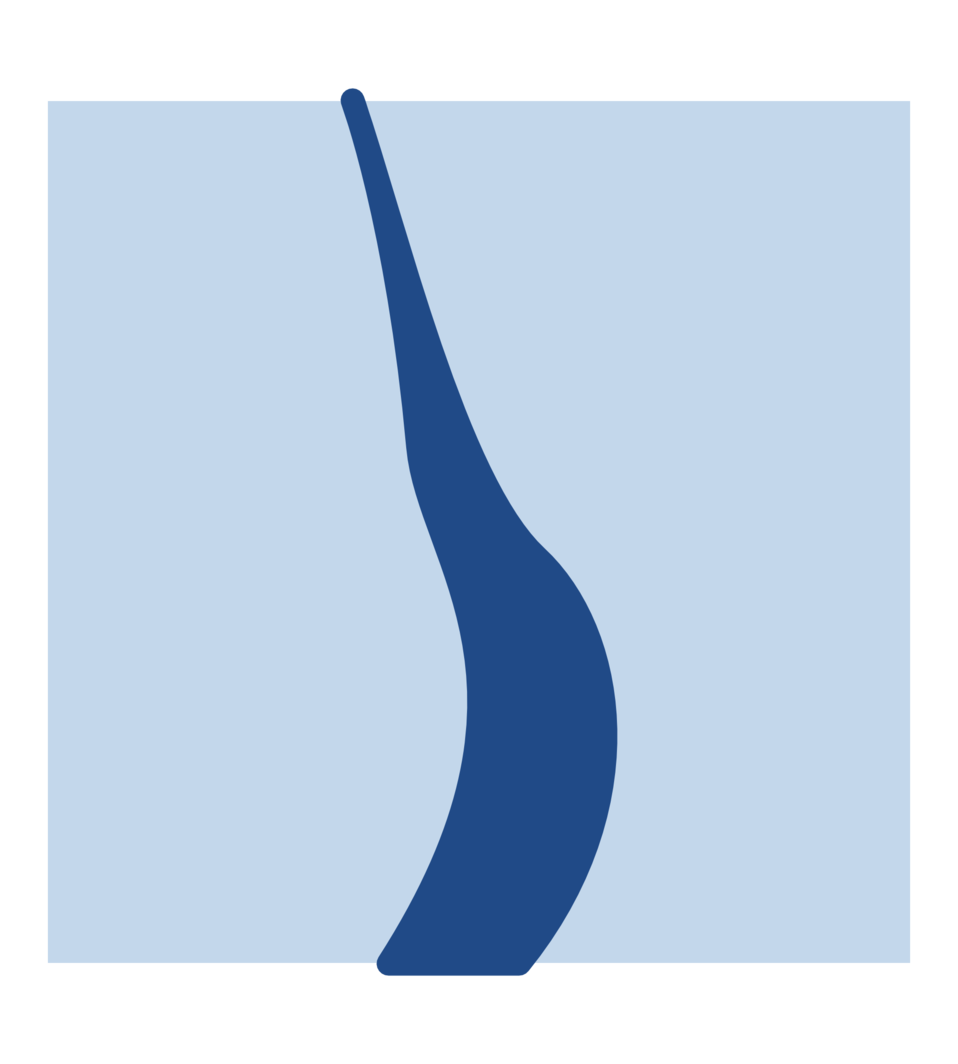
Icon for a river source